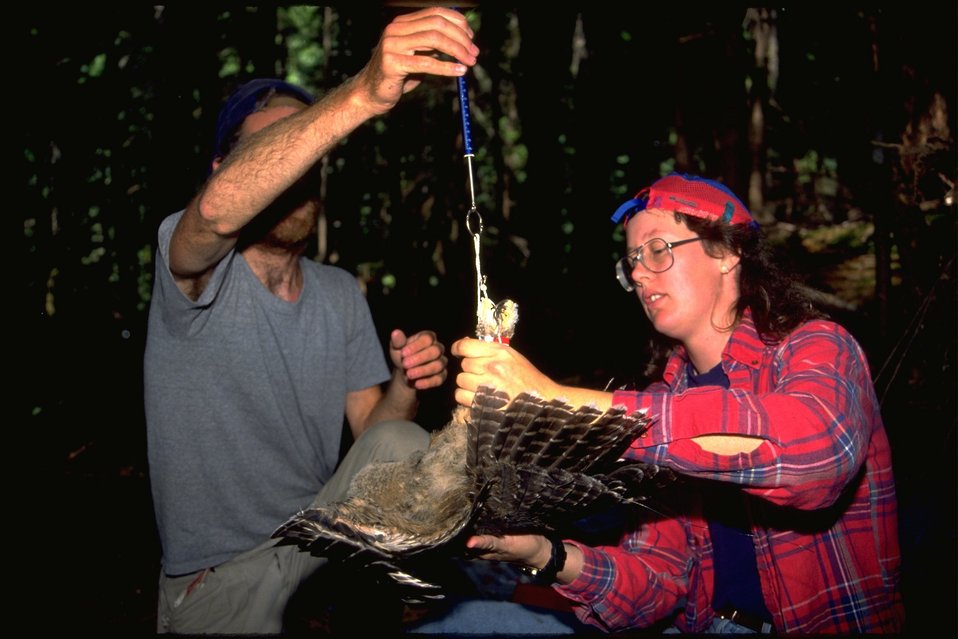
Bob and Paula weighing Northern Spotted Owl.